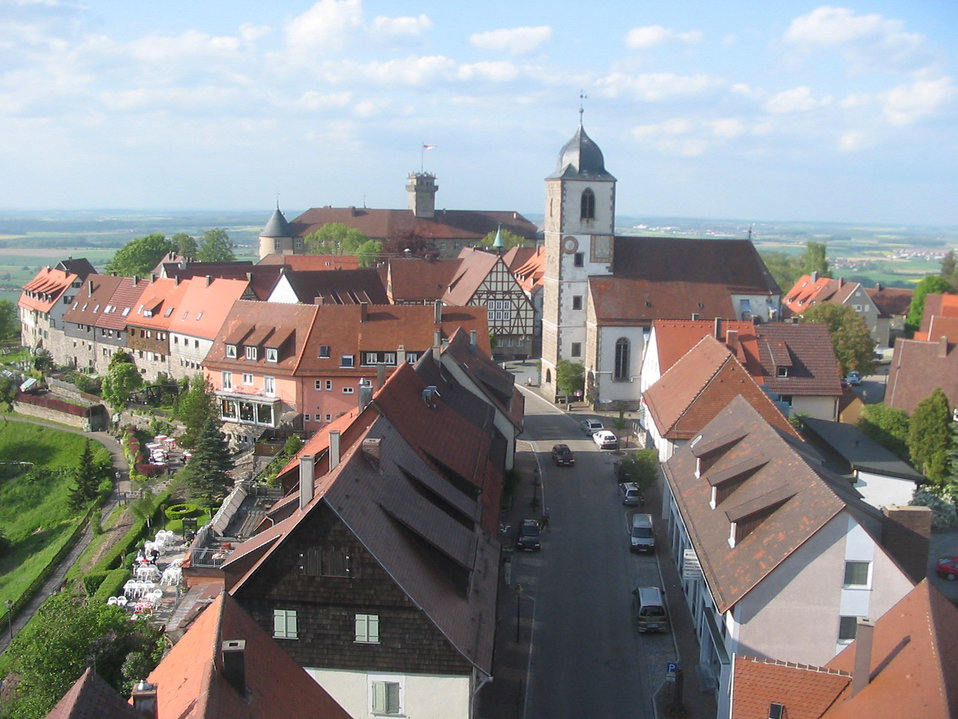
Der Ortskern von Waldenburg (Württemberg), Blick vom Bergfried (Staufferturm). Deutsch: Blick auf den Ortskern vom Bergfried aus